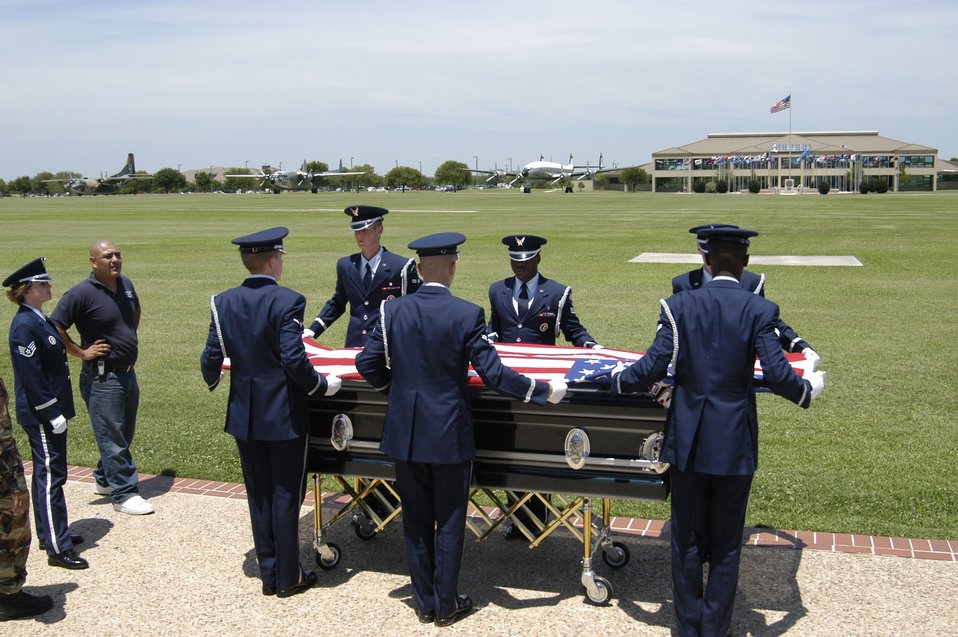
Video highlights honor guard mission

LACKLAND AIR FORCE BASE, Texas -- Honor guard pallbearers stretch the flag out flat before folding it during the filming of a performance on the parade grounds here. Airmen of the 37th Communications Squadron are producing a three-to-five minute honor guard mission video to help recruit new honor guard members.